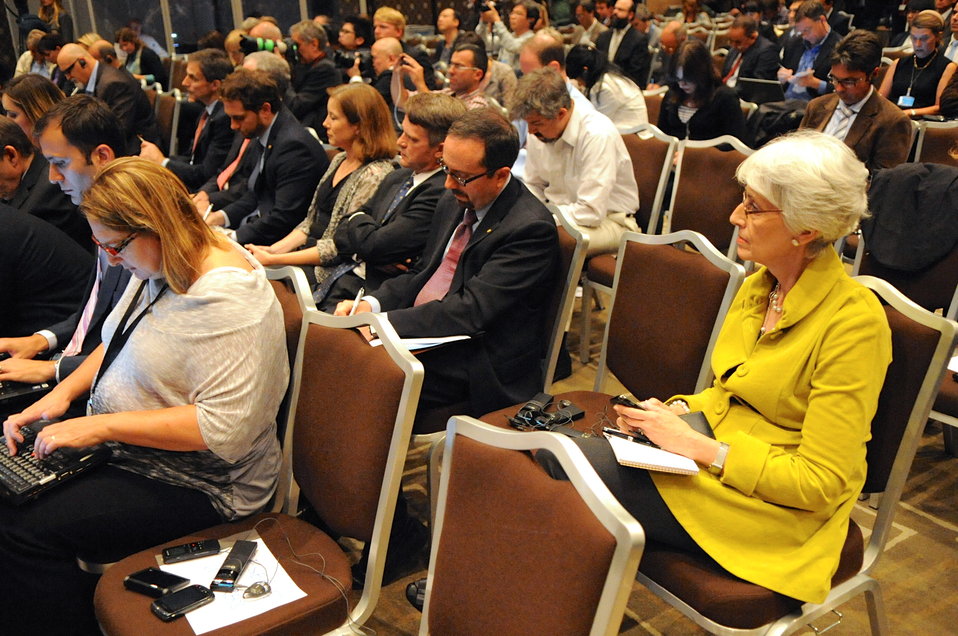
Undersecretary Sherman Listens to Secretary Kerry, Foreign Minister Lavrov

7:46 p.m., September 12, 2013 - Undersecretary for Political Affairs Wendy Sherman listens as U.S. Secretary of State John Kerry and Russian Foreign Minister Sergey Lavrov address reporters before the outset of their negotiations over the elimination of Syrian chemical weapons.